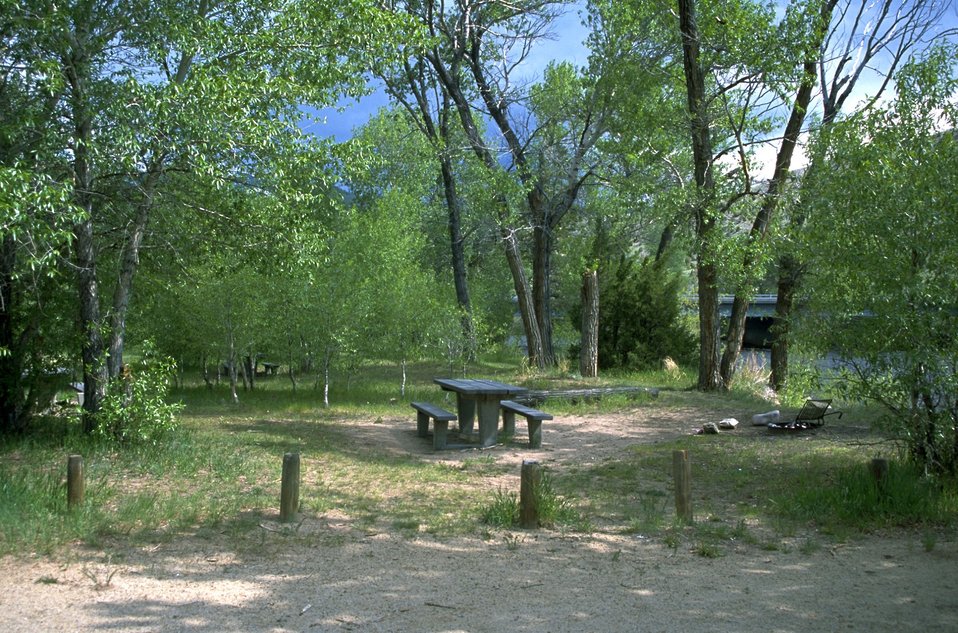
Picnic area at the Divide Day Use Area